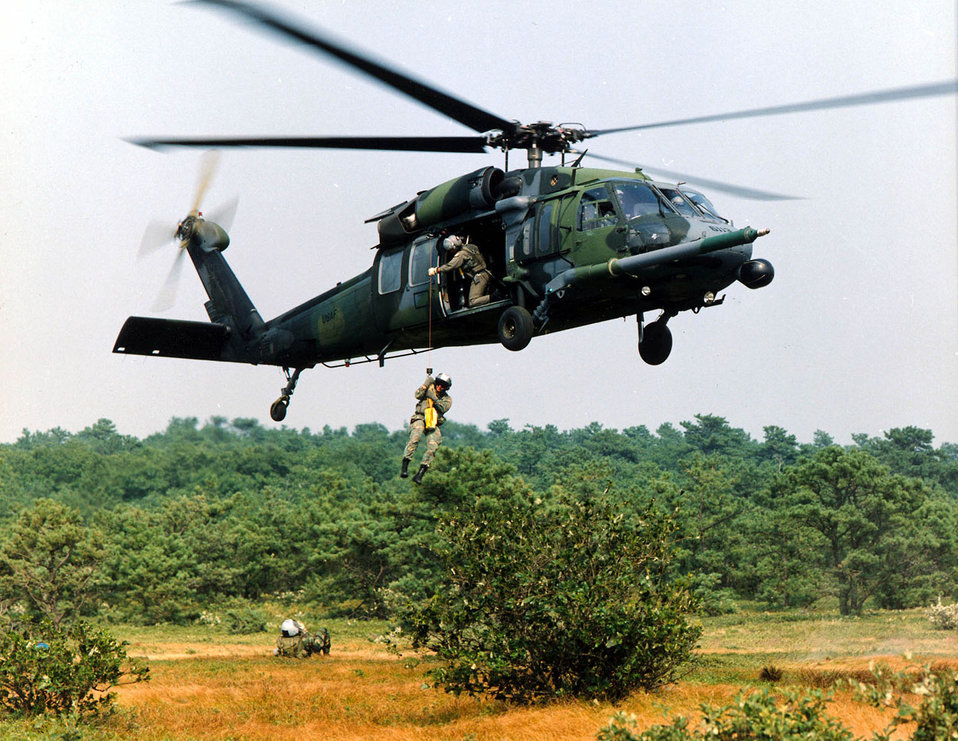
HH-60G Pave Hawk

FILE PHOTO -- The primary mission of the HH-60G Pave Hawk helicopter is to conduct day or night operations into hostile environments to recover downed aircrew or other isolated personnel during war. Because of its versatility, the HH-60G is also tasked to perform military operations other than war. These tasks include civil search and rescue, emergency aeromedical evacuation, disaster relief, international aid, counterdrug activities and NASA space shuttle support.